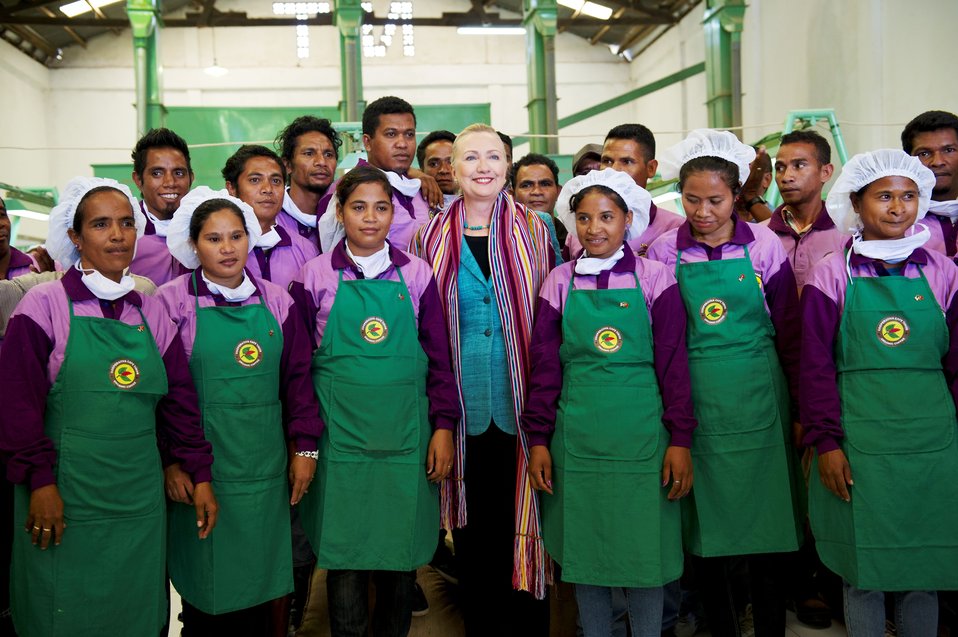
Secretary Clinton Smiles With Cooperativa Cafe Timor Workers

U.S. Secretary of State Hillary Clinton smiles with workers from the USAID founded Cooperativa Cafe Timor in Dili, Timor-Leste, September 6, 2012. The organic coffee cooperative brings income to over 21,000 Timorese families.